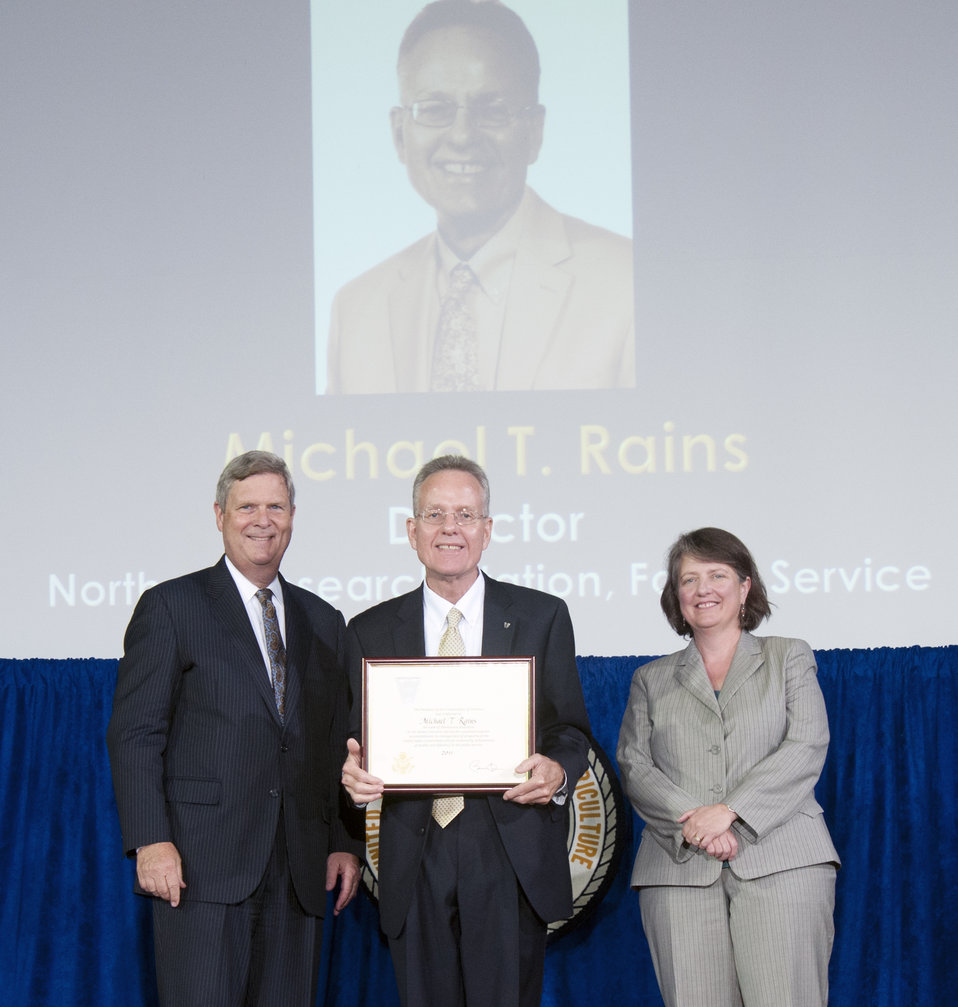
Agriculture Secretary Tom Vilsack and Agriculture Deputy Secretary Kathleen Merrigan present the Meritorious Executive Award to U.S. Forest Service (FS) Northern Research Station Director Michael T. Rains at the U.S. Department of Agriculture (USDA) 64th Annual Honor Awards Ceremony in Washington, D.C. on Wednesday, Sept. 12, 2012. The Meritorious Executive award in the Senior Executive Service is for sustained superior accomplishment in management of programs of the U.S. Government and for noteworthy achievement of quality and proficiency in the public service.